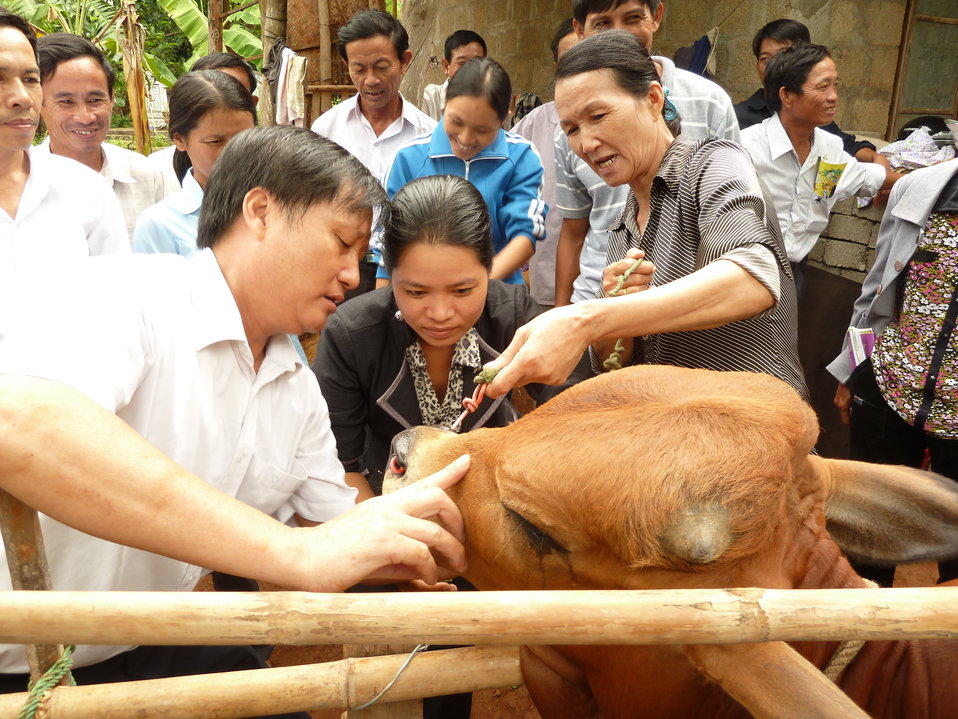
Animal health worker Tran Thi Hong Thuy, center, receives training in Quang Tri Province.